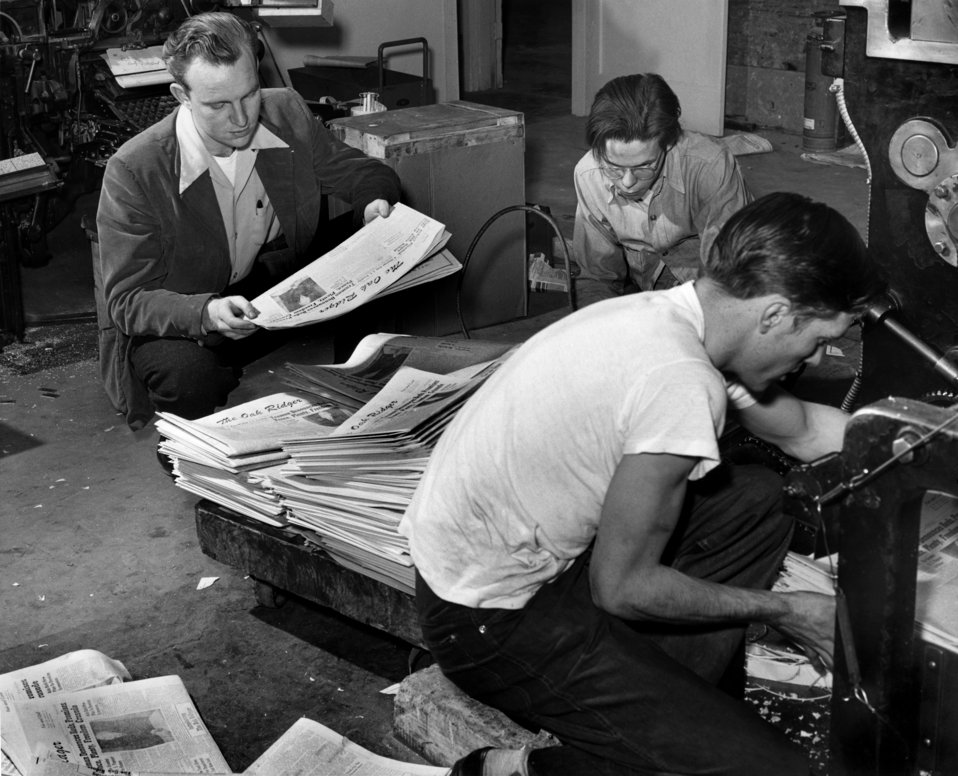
First Run of Oak Ridger Newspaper

5354-8 DOE photo Ed Westcott 1-20-1949 Oak Ridge Tennessee